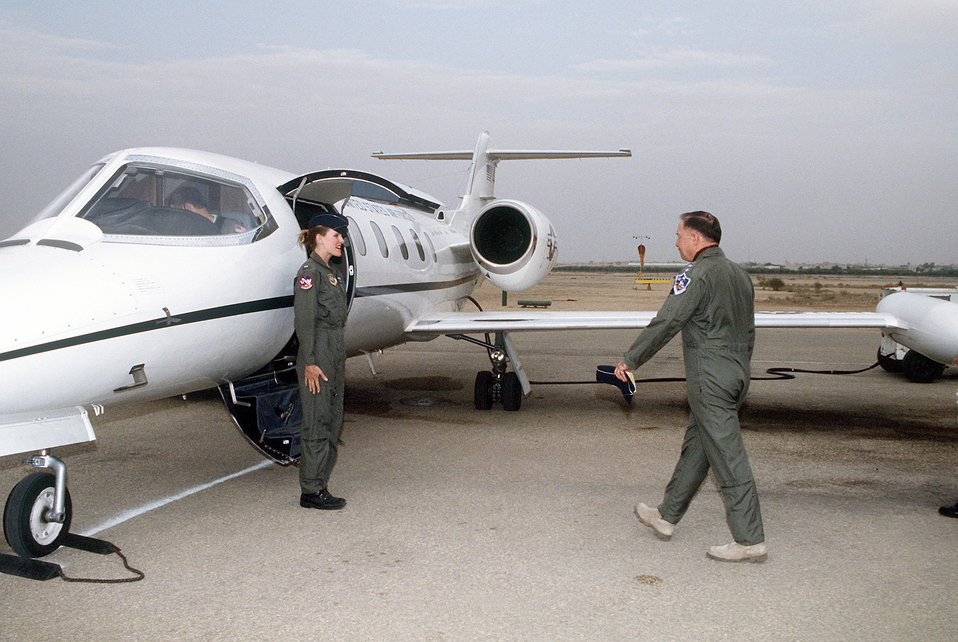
Operation Desert Storm

First Lt. Jennifer Bier, 1402nd Military Airlift Squadron, stands at attention as Lt. Gen. Charles Horner, commanding general, U.S. Central Air Force, prepares to board a C-21A jet. General Horner is visiting various coalition countries in the aftermath of Operation Desert Storm.